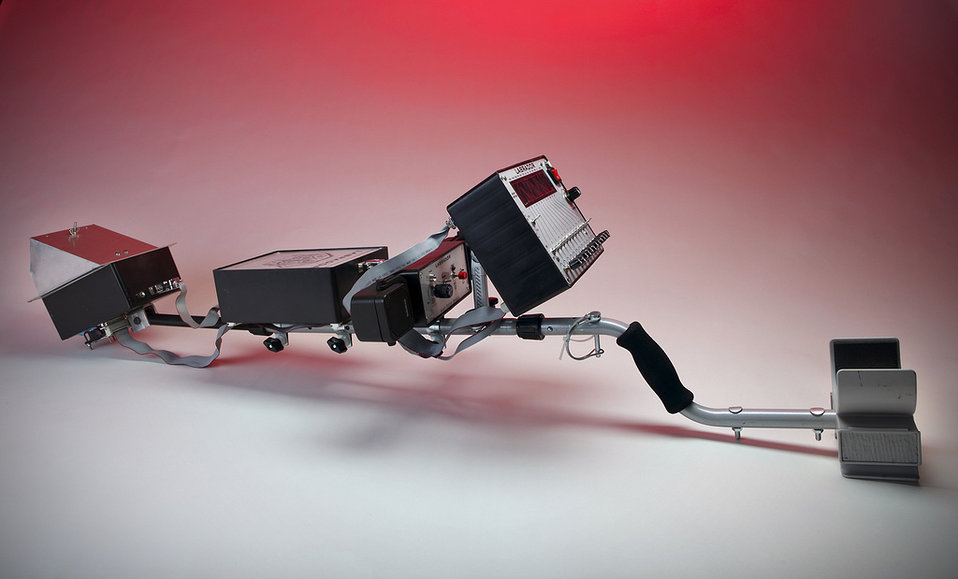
AT OAK RIDGE NATIONAL LABORATORY, A SCIENTIST HAS DEMONSTRATED THAT ALGAE CAN BE USED AS BIOSENSORS TO DETECT THE PRESENCE OF TOXINS AND CHEMICAL WARFARE AGENTS IN PRIMARY SOURCE DRINKING WATER.

Lightweight Analyzer for Buried Remains and Decomposition Odor Recognition (LABRADOR) at Oak Ridge National Laboratory detects volatile organic chemical compounds relevant to human decomposition. Police searching for victims in clandestine graves could soon have a new tool that will make their task considerably easier.